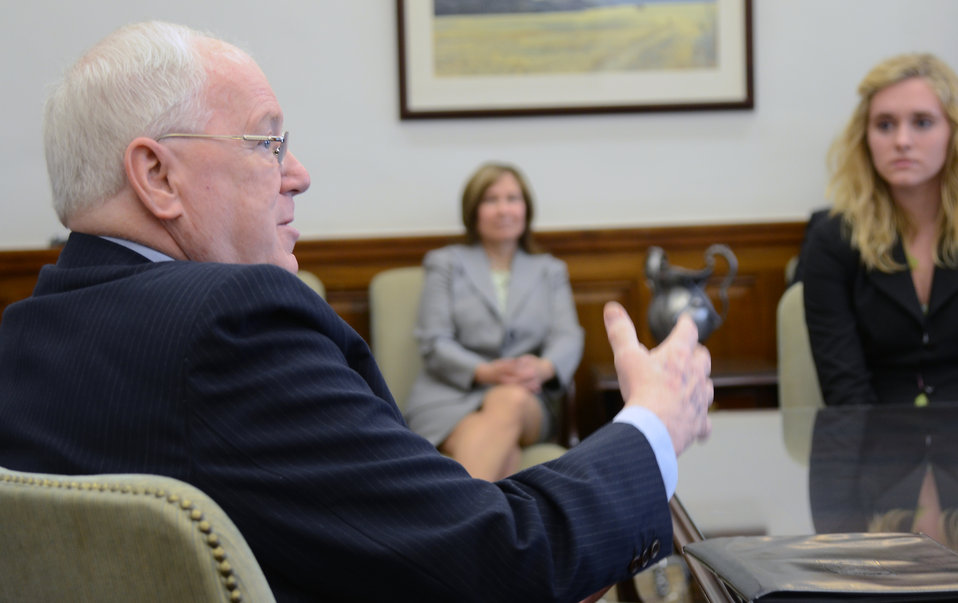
Dr. Kenneth M. Quinn, former U.S. Ambassador to the Kingdom of Cambodia, and Executive Director of the World Food Prize talks with Wallace Carver interns at the Whitten Building, U.S. Department of Agriculture in Washington, D.C., on Thursday, June 14, 2012.